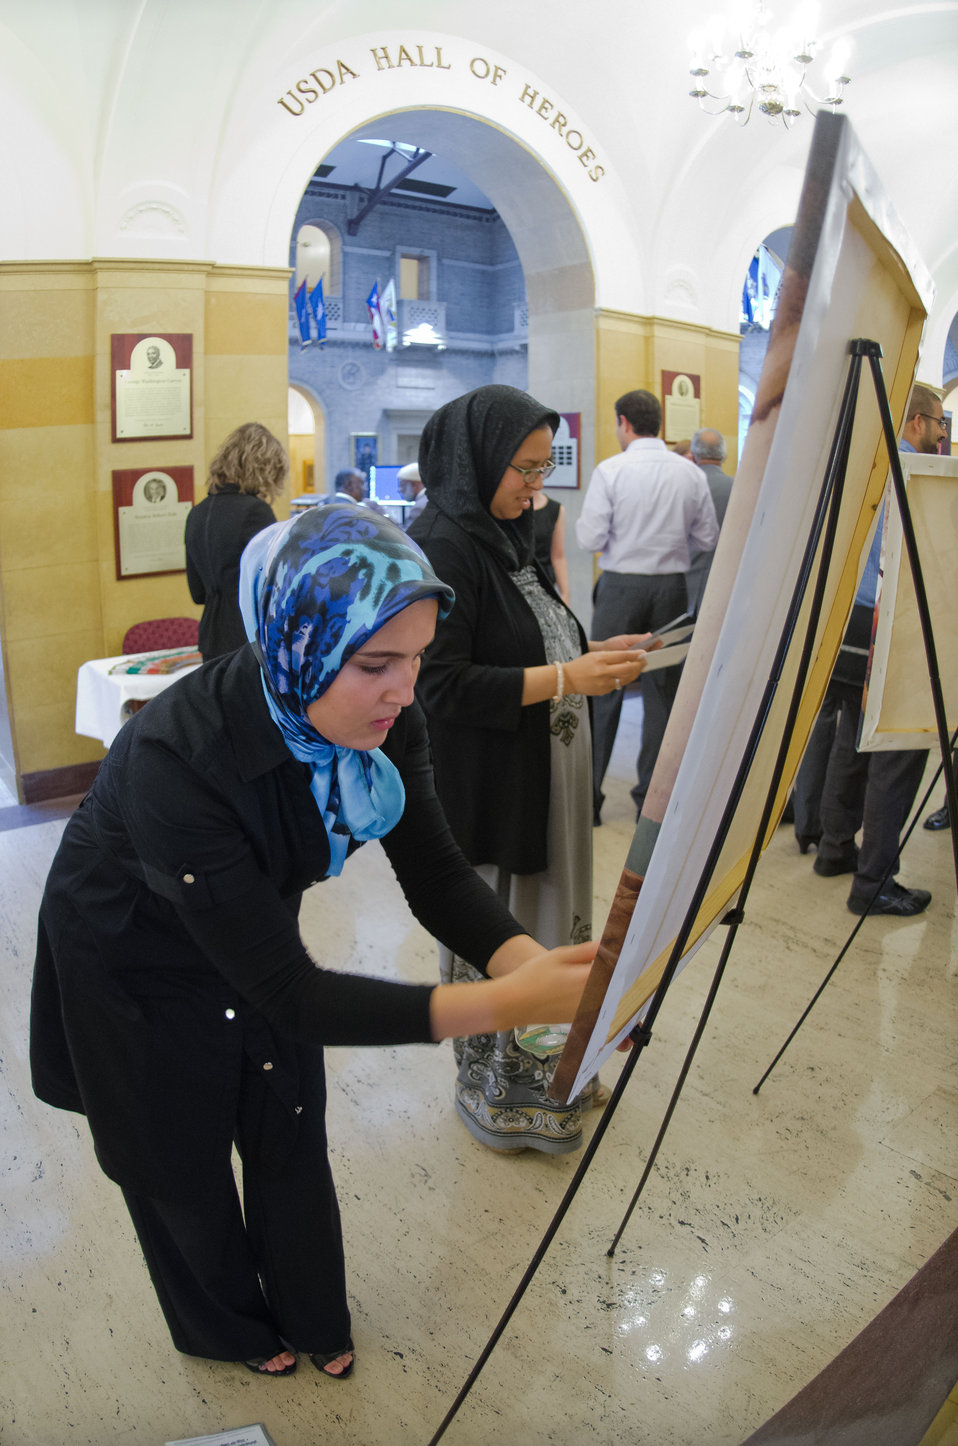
Ridwan Adhami's photography exhibit is prepared for the Iftar event, co-sponsored by the Iftar celebration, co-sponsored by the U.S. Department of Agriculture, U.S. Agency for International Development (USAID) and Islamic Relief USA, on Tuesday, August 7, 2012, in the USDA Whitten Building, in Washington, D.C. Ramadan is the month of fasting, intensive prayer, sacrifice and worship for Muslims around the world. Throughout this month, Muslims fast during the day, abstaining from consuming food from dawn to dusk and using this time to purify spiritually. Fasting reminds Muslims of the poverty and hunger suffered by many in the United States and worldwide. It is a connection with those who are hungry not through devotion, but through the many global factors that lead to hunger and famine. Iftar is the meal at which Muslims break their fast at sunset, usually by eating dates, according to the Prophetic tradition.